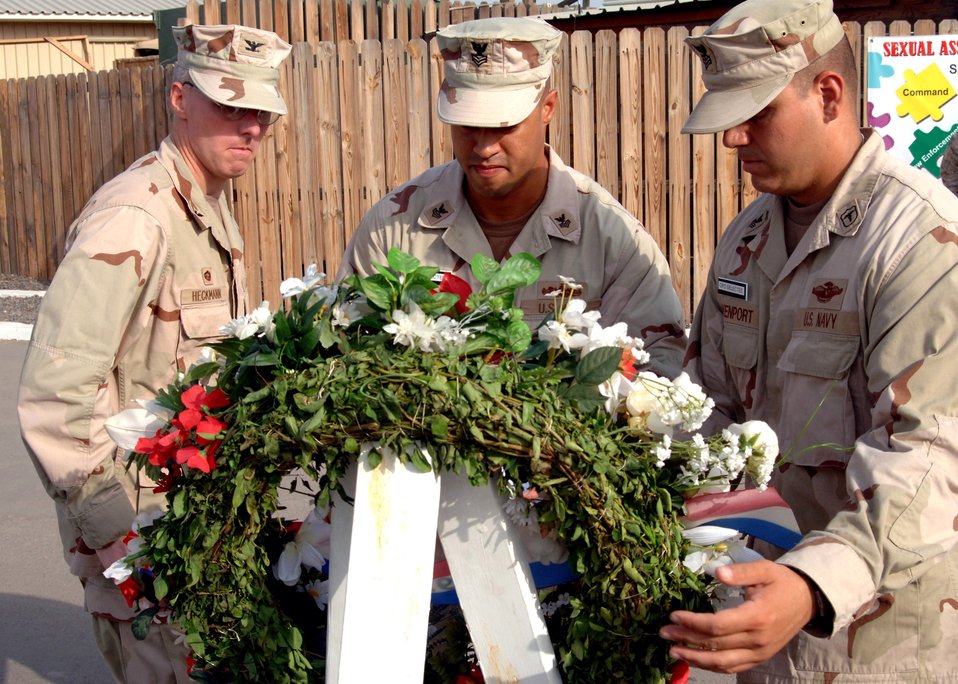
Sept. 11 remembered in Djibouti

(From left) Capt. John Heckmann, Navy Petty Officer 1st Class Arcenet Vazquez and Navy Petty Officer 1st Class Eric Davenport present a wreath in remembrance of the sixth anniversary of Sept. 11 at Camp Lemonier, Djibouti. The wreath presentation was one of the events sponsored by the Combined Joint Task Force-Horn of Africa 2008 Navy chief selectees. Captain Heckmann is the Camp Lemonier commanding officer.